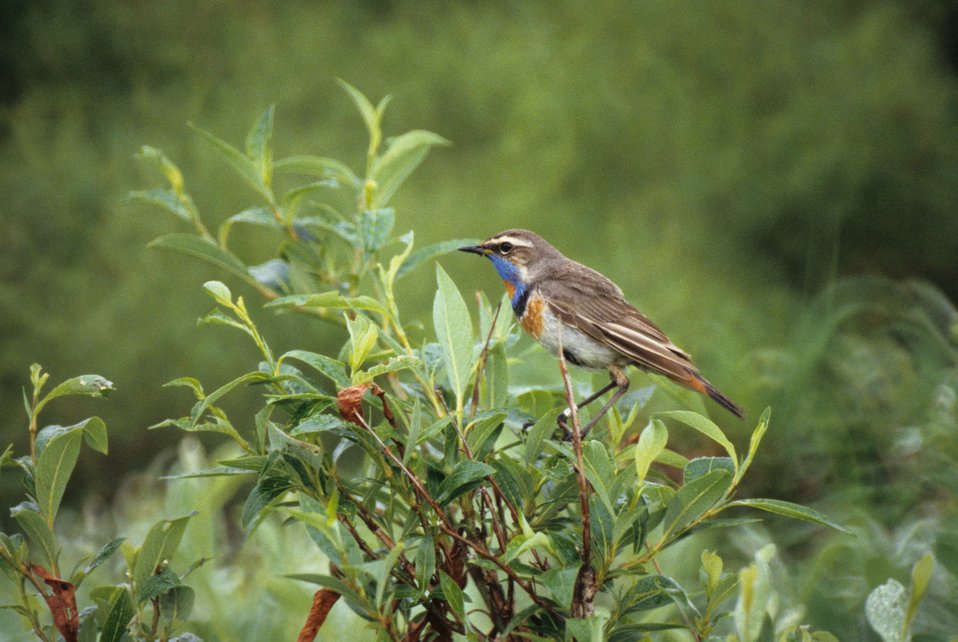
Bluethroat Male

The Bluethroat is one of the smallest members of the Thrush family measuring 5.5 (14 cm) inches in length. The colorful blue throat pattern distinguishes this breeding male from other species. Nests are found on the tundra in thickets near water. The Blue